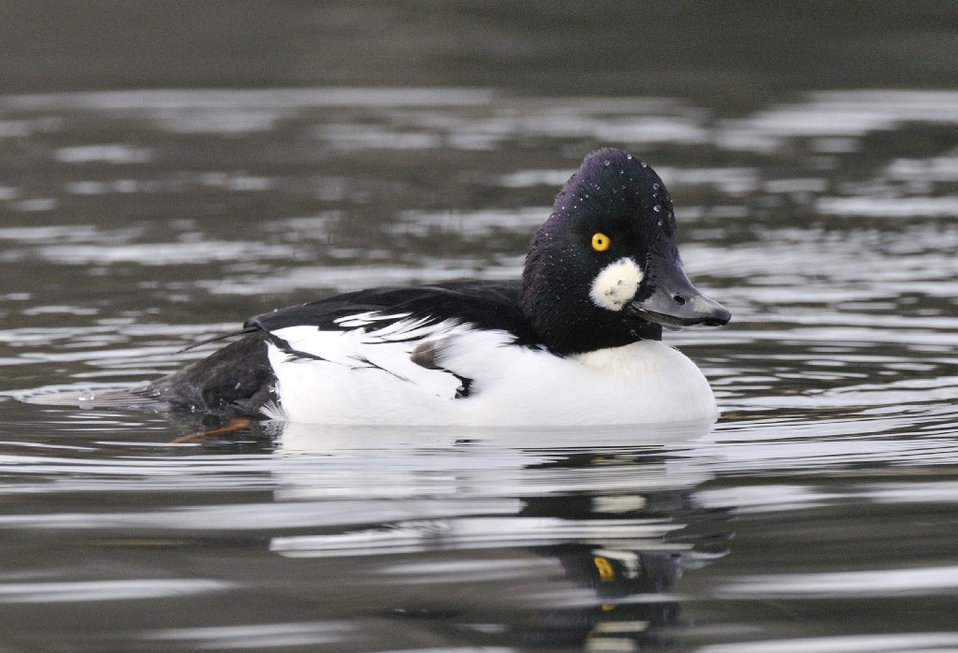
Photo of the Week - Common Goldeneye

Photo of the Week - 6/24/2013

The common goldeneye is the representative species on the 2013-2014 Federal Duck Stamp.